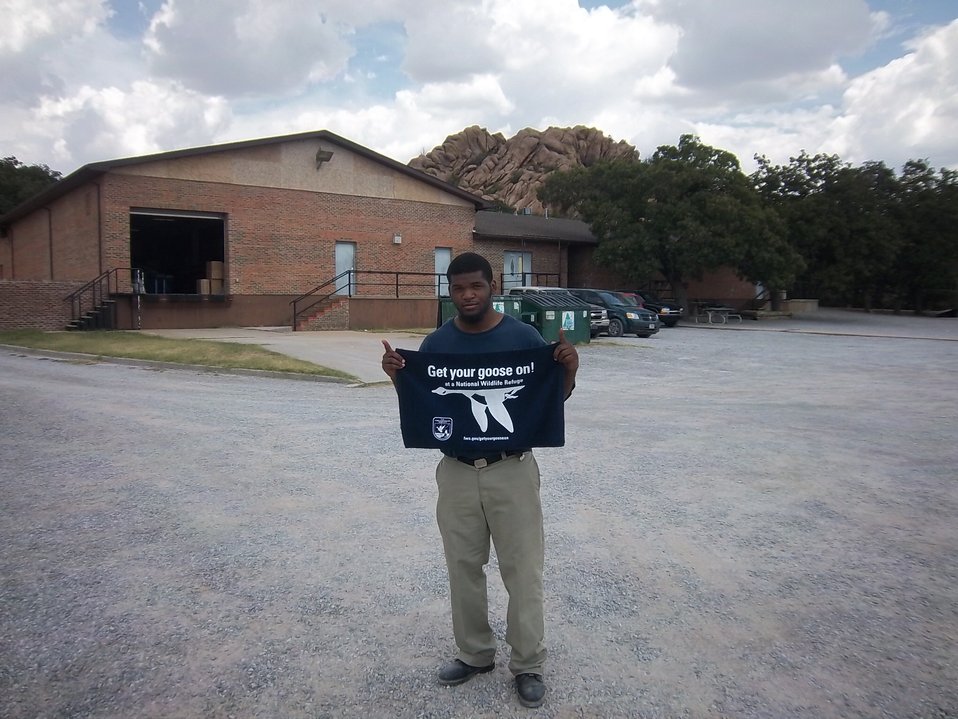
Get Your Goose On!

Wichita Mountains National Wildlife Refuge in Oklahoma.